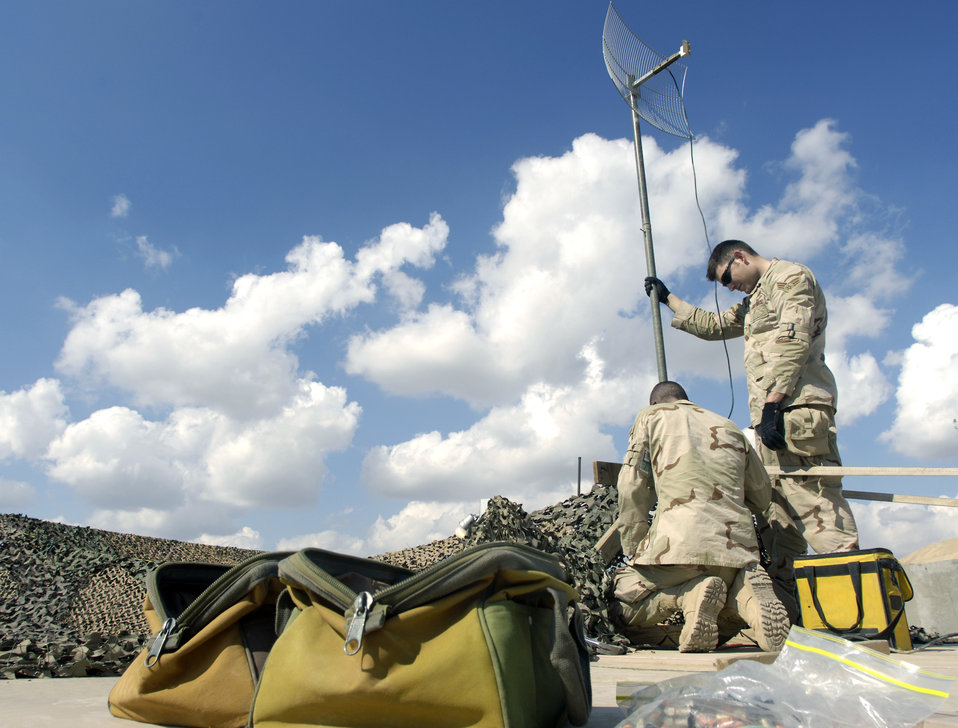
Can you hear me now?

Senior Airman Ricardo Reveles and Airman 1st Class Sven Bickham install an antenna and align a satelite dish for the best signal Feb. 17 at Balad Air Base, Iraq. The Airmen are 332nd Expeditionary Communications Squadron satelite communication journeyman and support 50 installations in the region.